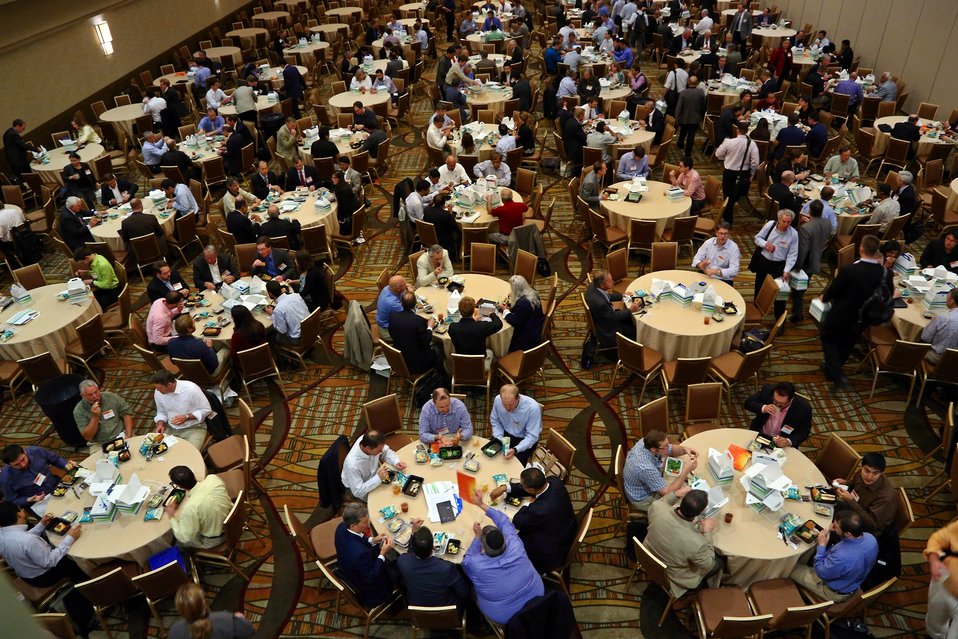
Day 2 Subprogram Overviews 1

A SunShot SunShot Subprogram Overview session.